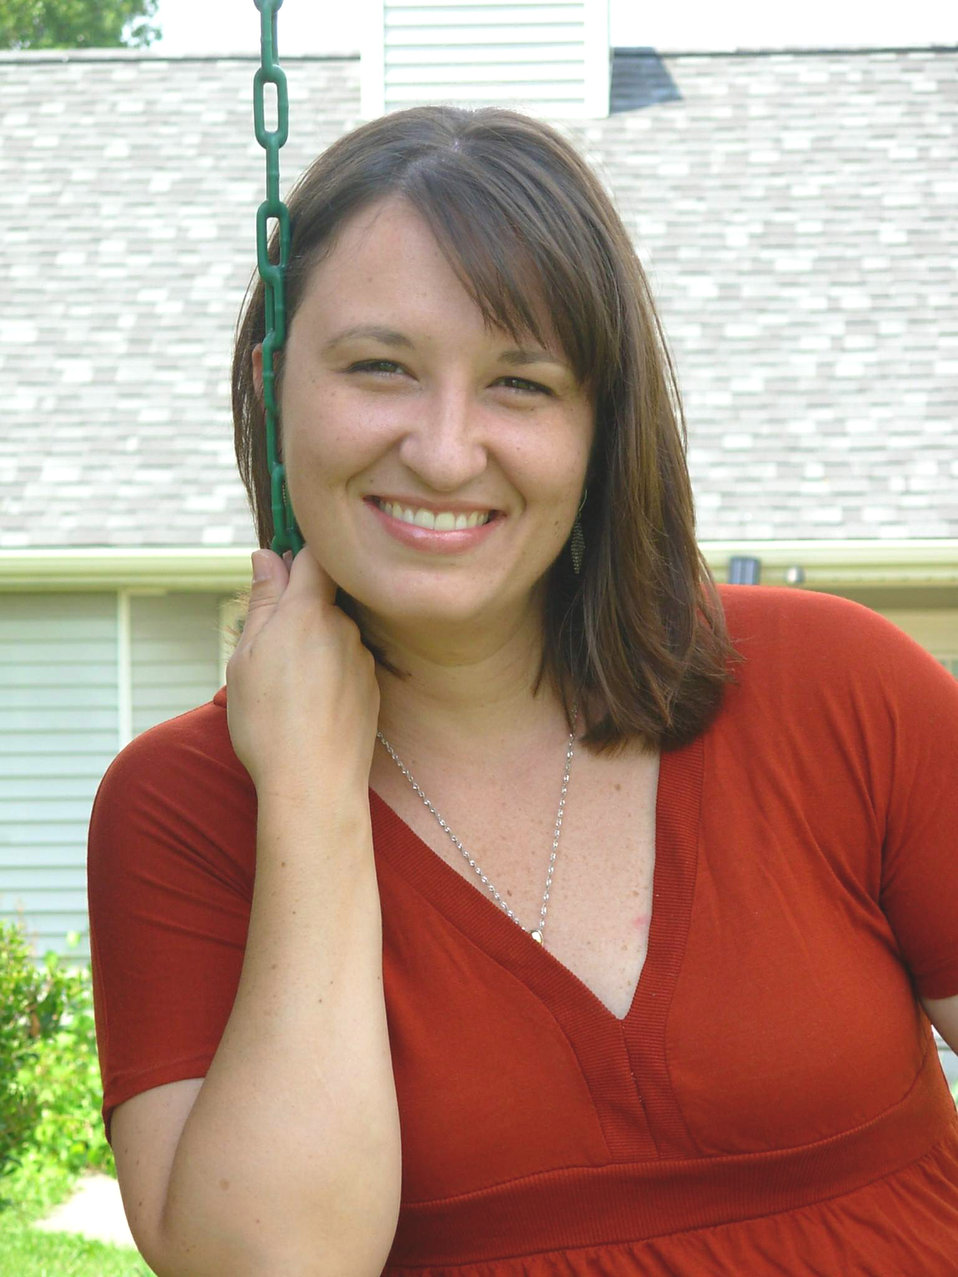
'Her War' podcast aims to help military wives

Melissa Seligman is the host of the new 'Her War' podcast for military wives dealing with deployment issues. Mrs. Seligman also is the author of